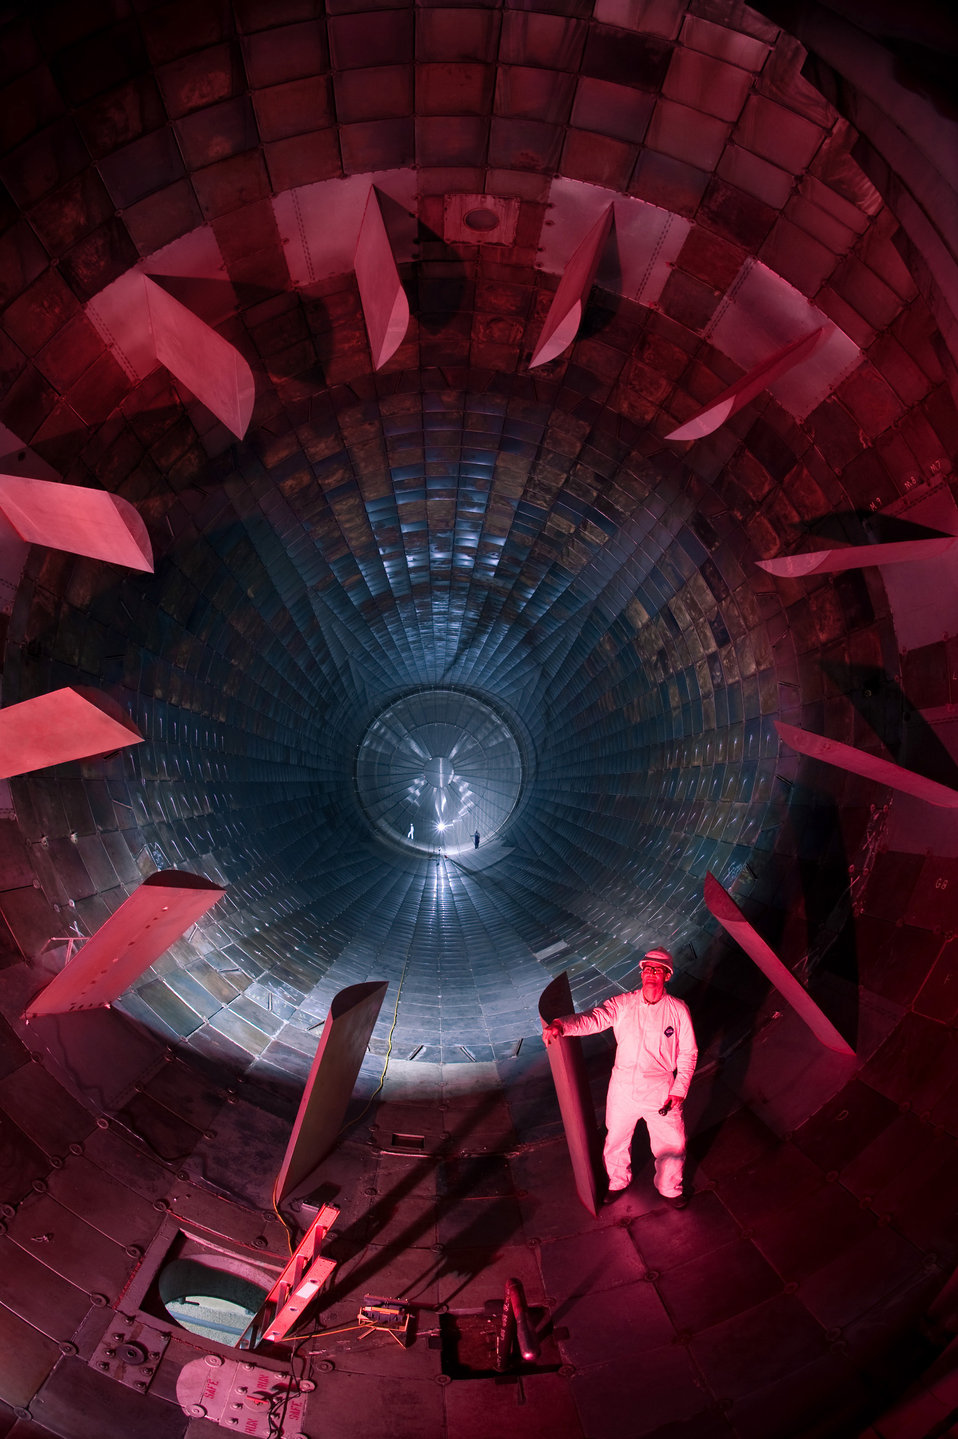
Blow Hard

Dr. Richard Roberts conducts a site visit inside the diffuser section of the16-foot supersonic wind tunnel at Arnold Air Force Base, Tenn., Oct. 6, 2009. Dr. Roberts is the project manager of the von Karman Gas Dynamics Facility and the Propulsion Wind Tunnel Facility, located at Arnold Engineering Development Center. There are three wind tunnels. They use two closed-circuit wind tunnels (one to simulate transonic speeds and the other supersonic), with 16-foot-square test sections, are also used for conventional aerodynamic tests. Air that has been pushed through the section seen has passed through progressively narrowing tunnel sections and 90-degree turns that leads to the test section.